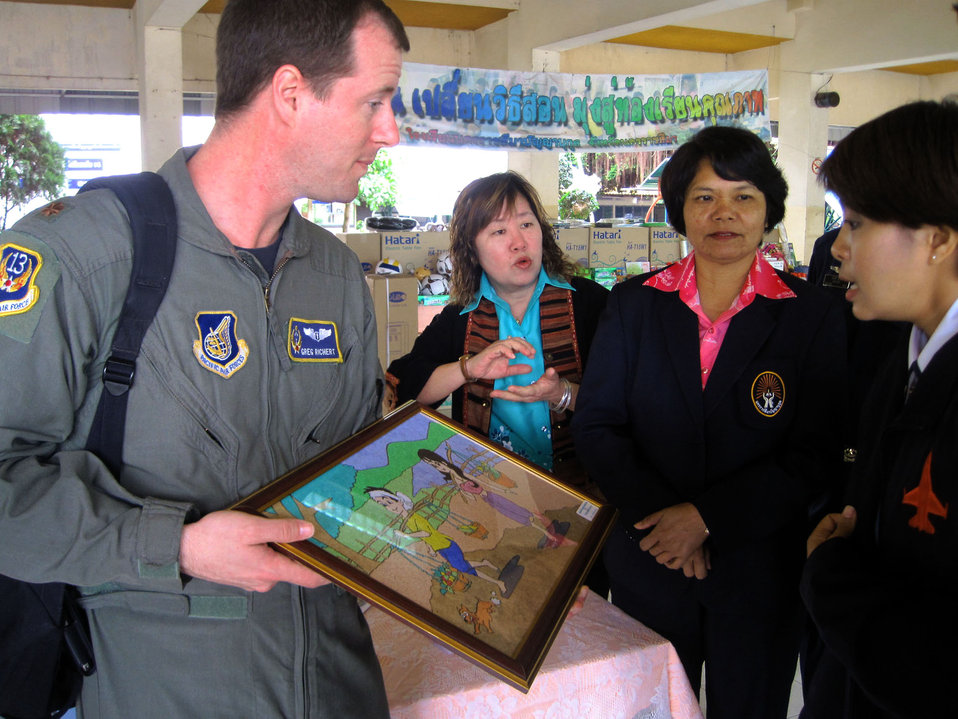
Cope Tiger 2011

Maj. Greg Richert accepts a thank-you gift on behalf of Cope Tiger Airmen who donated toys and school supplies to school children during a community outreach event March 18, 2011, in Korat, Thailand. Major Richert is the chief of aerospace medicine at 13th Air Force, Joint Base Pearl Harbor-Hickam, Hawaii, and the medical lead for Exercise Cope Tiger 2011, an annual, multilateral, joint field training exercise being conducted at Korat and Udon Thani Royal Thai Air Bases March 14 through 25.